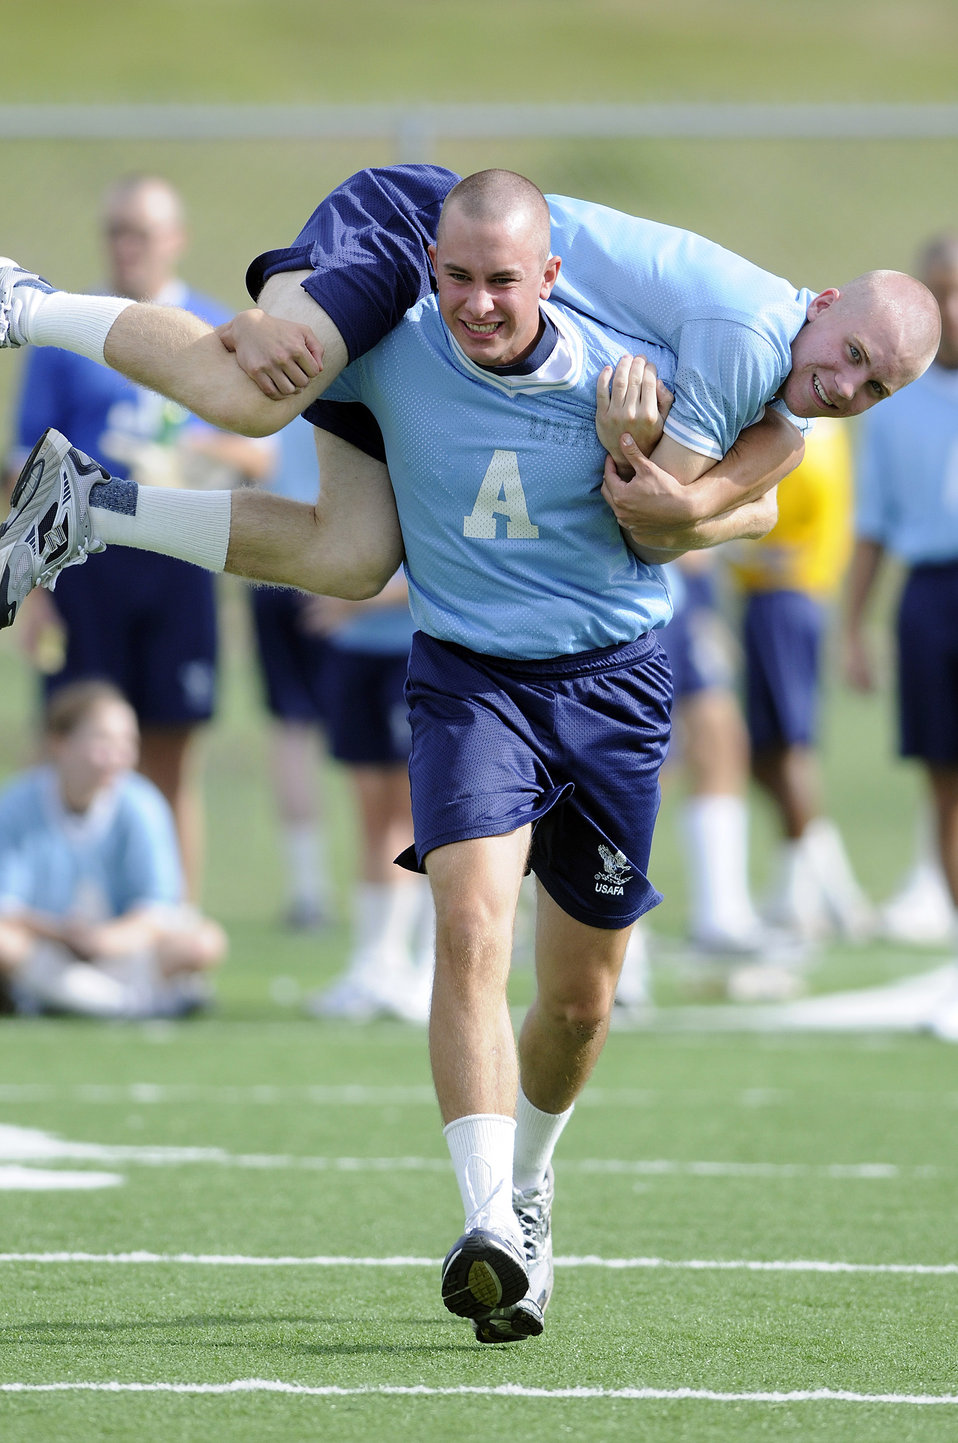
Class of 2013 Field Day

Basic cadet trainees with the U.S. Air Force Academy's Class of 2013 participate in the guerilla relays during Field Day activities here today. About 1,344 trainees competed in various athletic events during Field Day, including tug
of war, log relays, steeple chase and sprint relays. Basic cadet training started June 25 and continues through Aug. 1. The new cadets are in their first month of training and are learning about Air Force heritage, honor, discipline and Air Force core values, in addition to improving physical
fitness. The fall academic semester begins Aug. 6.